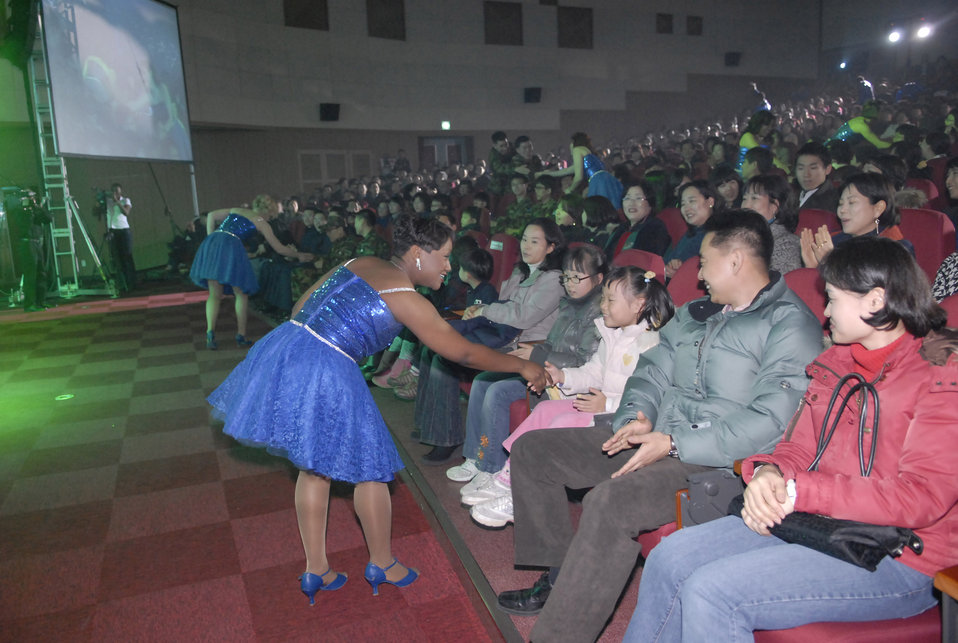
Tops In Blue Airmen entertain forces in South Korea

Airman 1st Class Alice Lewis greets the audience during a performance at the South Korean armed forces headquarters Dec. 19. The peformance was part of the year-long celebration of the 60th anniversary of the South Korean armed forces. Airman Lewis is a Tops In Blue member.